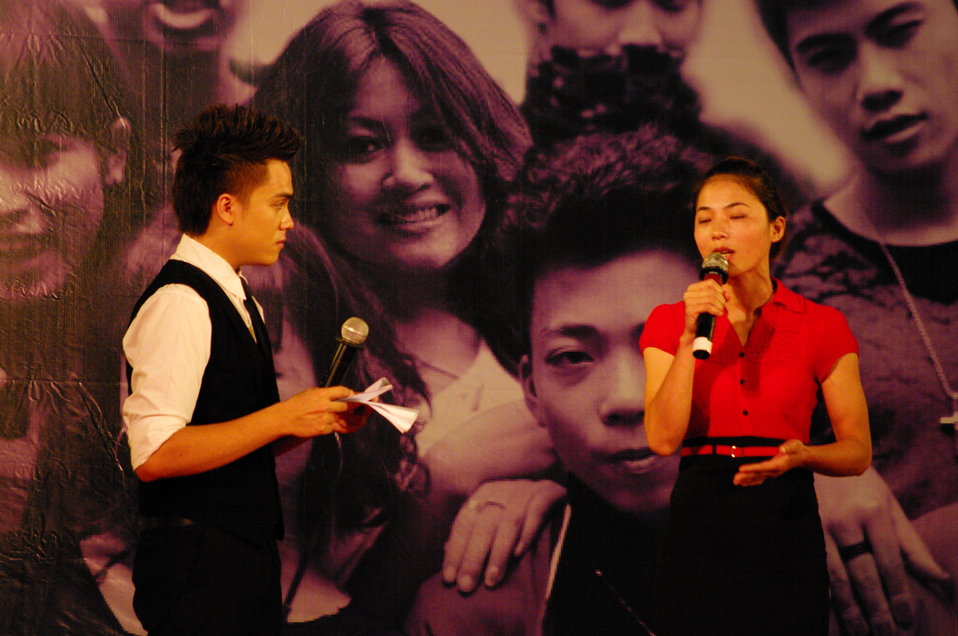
PEPFAR Sponsors Hip Hop to Stop the Spread of HIV